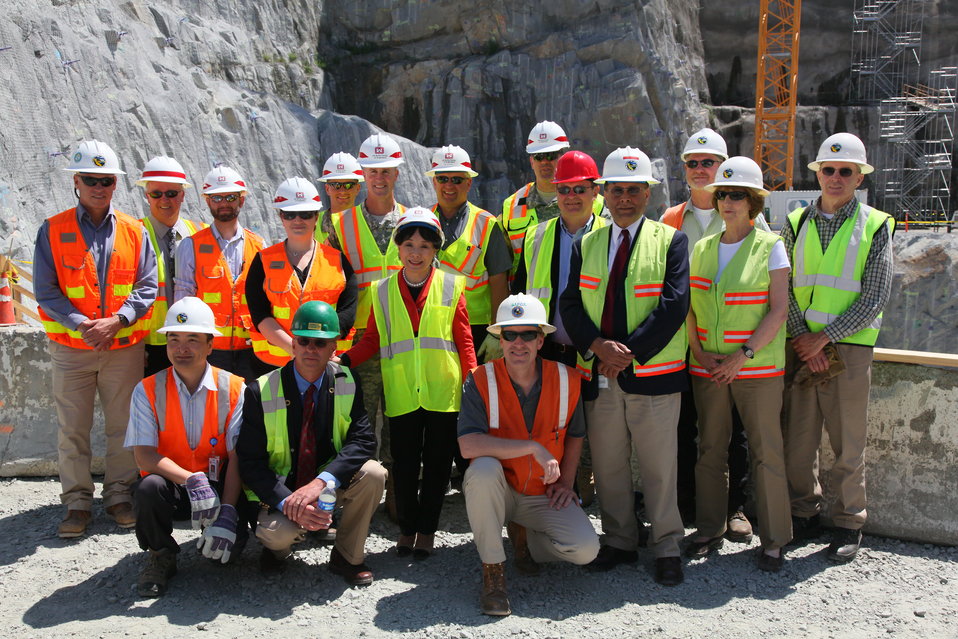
First concrete placed for new Folsom Dam spillway

U.S. Rep. Doris Matsui (center), poses with Brig. Gen. Mike Wehr (sixth from left, standing), commander of the U.S. Army Corps of Engineers South Pacific Division, Col. Bill Leady (sixth from right, standing), commander of the Corps’ Sacramento District, and personnel from the Corps and U.S. Bureau of Reclamation at Folsom Dam in Folsom, Calif., May 24, 2012. Matsui, and U.S. Rep. Dan Lungren, attended a ceremony commemorating the first concrete placement for the auxiliary spillway control structure at the dam. The spillway project is part of the Folsom Dam Joint Federal Project, a joint effort of the Corps, Bureau, the Central Valley Flood Protection Board and the Sacramento Area Flood Control Agency to improve the safety of the dam and reduce flood risk for the greater Sacramento area.